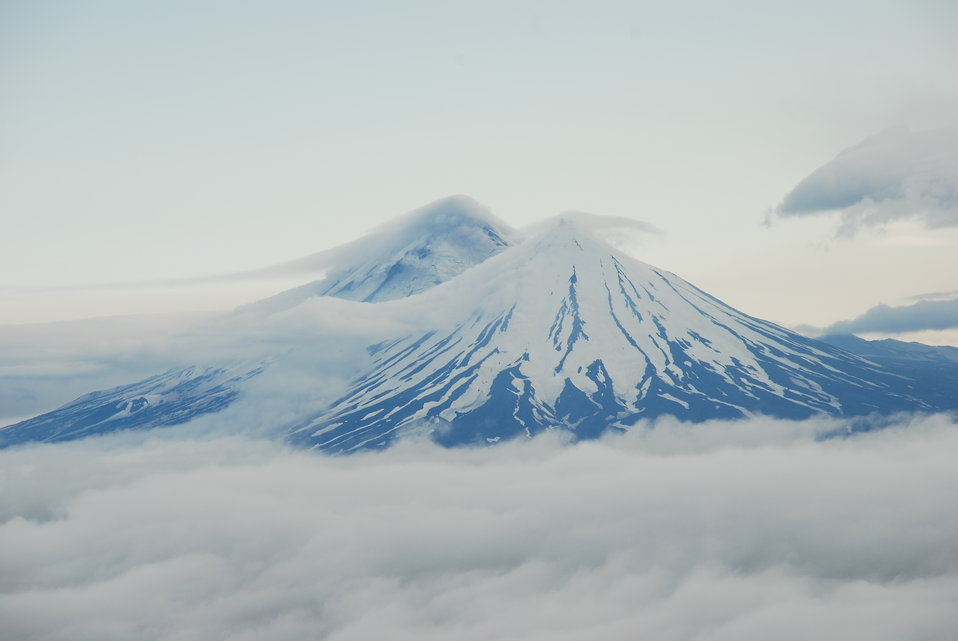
Pavlof and Pavlof Sister Volcanoes

Volcanoes of the southern Alaska Peninsula